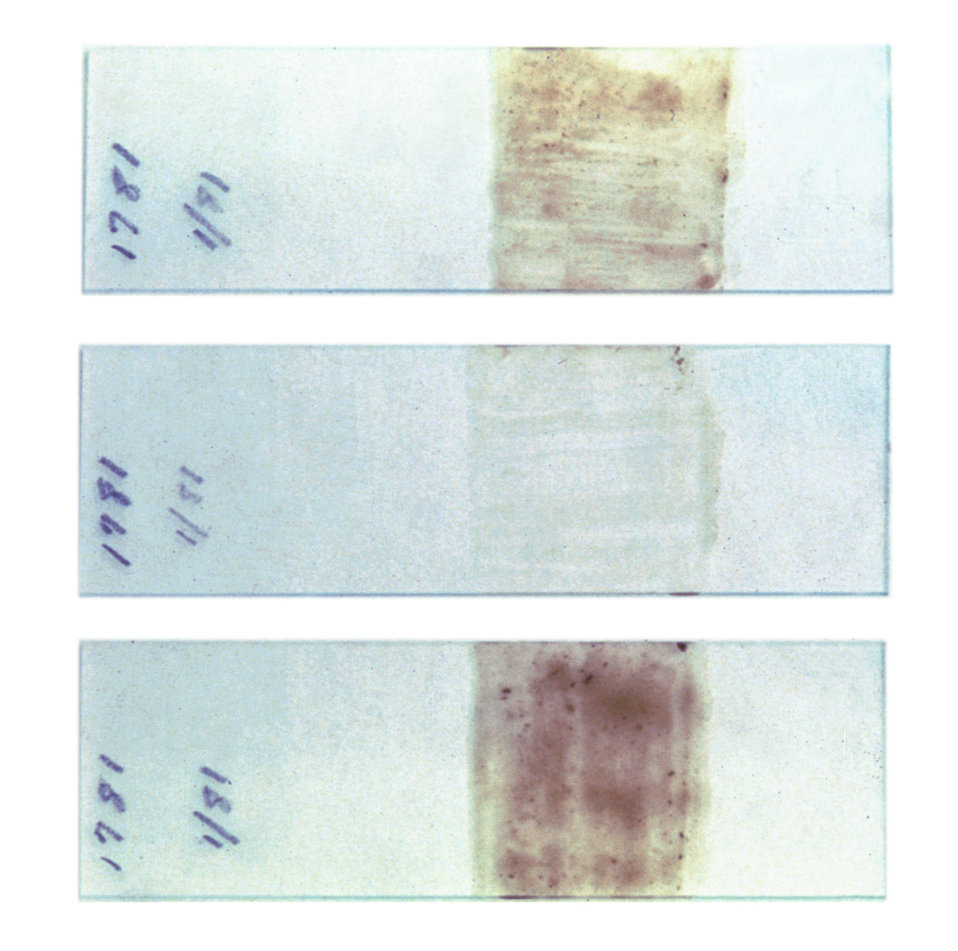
This is a photograph of PVA-fixed (polyvinyl chloride) fecal smears ready for staining.